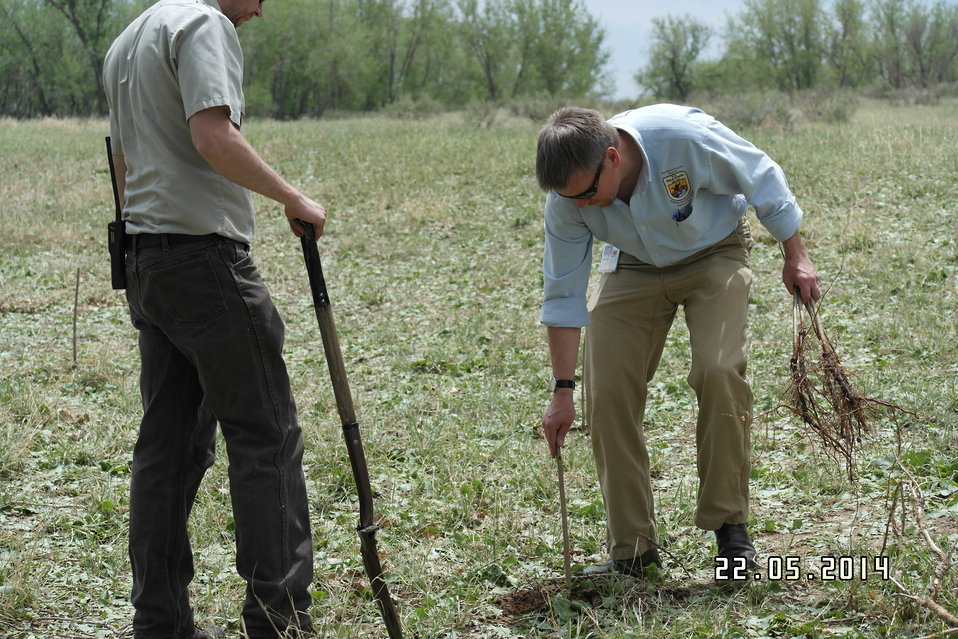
Deputy Regional Director Matt Hogan Planting Trees

Jewell made the announcement at an event at Rocky Mountain Arsenal National Wildlife Refuge outside Denver, Colorado, where she was joined by U.S. Department of Agriculture (USDA) Deputy Under Secretary for Natural Resources and the Environment Arthur “Butch” Blazer; Greg Knadle, Vice President for Government Relations of the National Fish and Wildlife Foundation (NFWF); Refuge Manager David Lucas and youth corps members of Groundwork Denver.